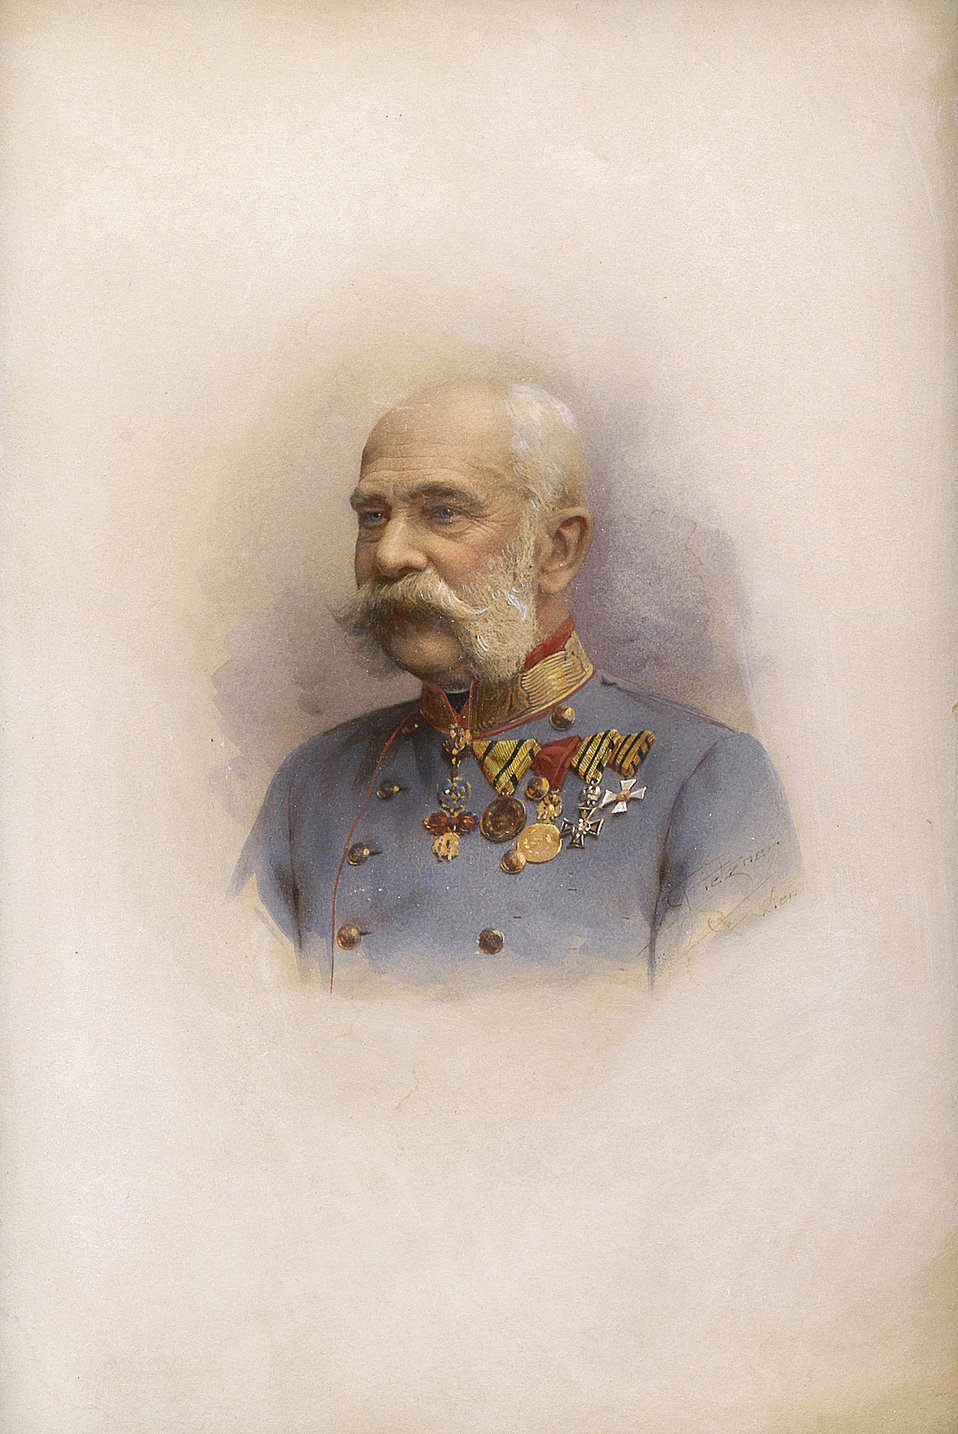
Deutsch: Porträt des alten Kaisers Franz Joseph in Uniform mit Ordensschmuck, Aquarell auf Druckunterlage(?), signiert 'C. Pietzner Wien', 22 x 15 cm, in einem Rahmen mit Widmungsplaquette 'Montecuccoli Dragoner Regimentsrennen 1905' (hier nicht abgebildet)